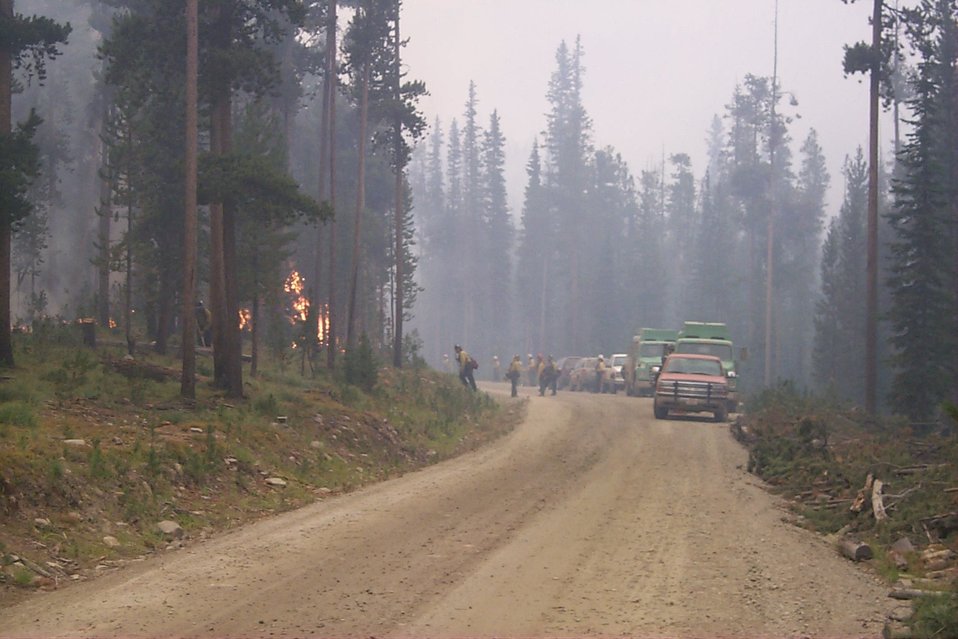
Fire fighters Fire Clearwater Fire Salmon Field Office USRD Upper Snake River District